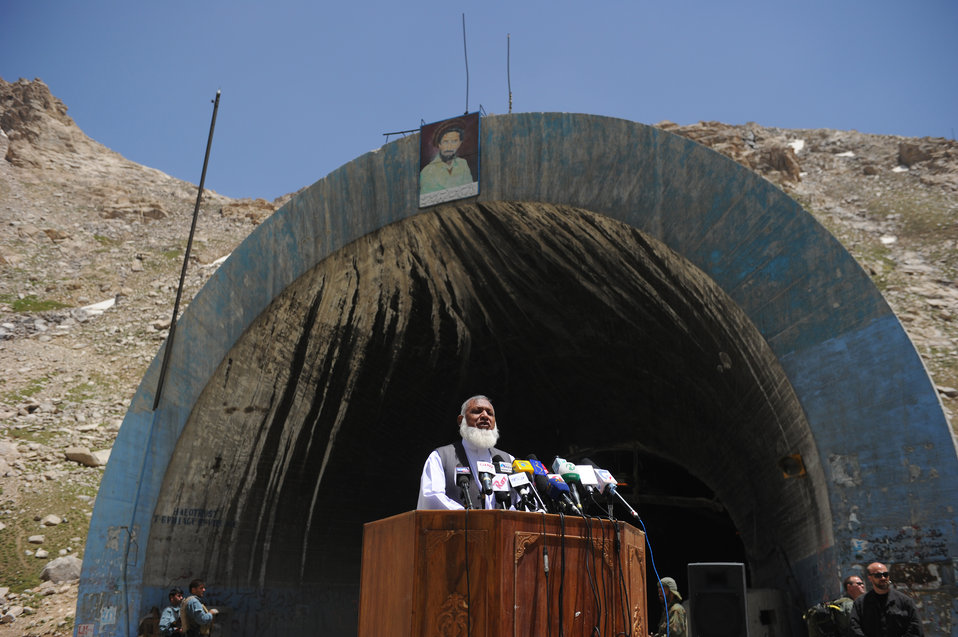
Baghlan Governor Mohammad Akbar Barakzai makes remarks during a ceremony to mark the beginning of renovations at the Salang Tunnel on the border of Parwan and Baghlan Provinces, Afghanistan, on Wednesday, June 15, 2011. (S.K.Vemmer/Department of State)